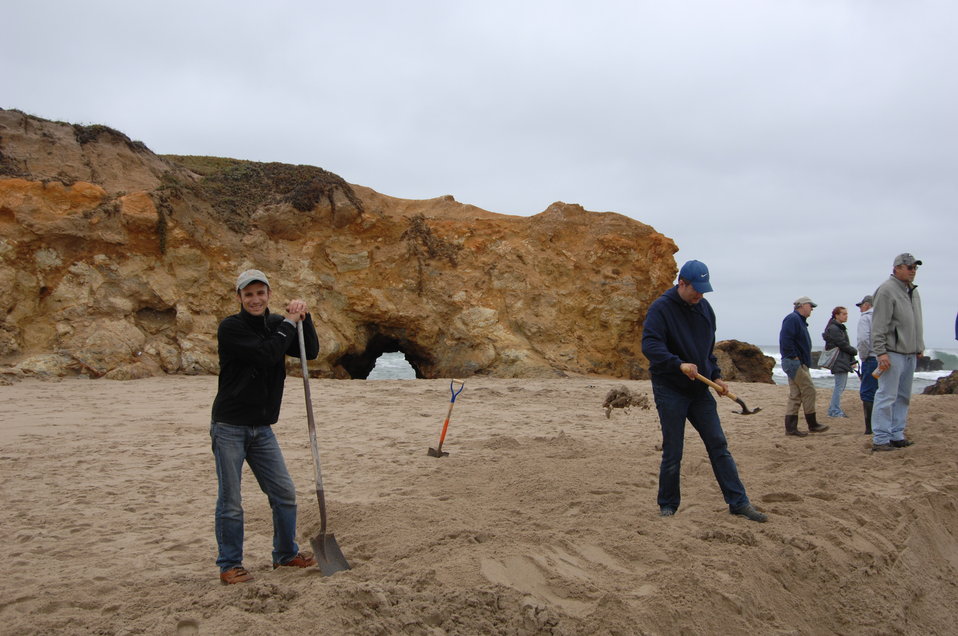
Pescadero Breach 16